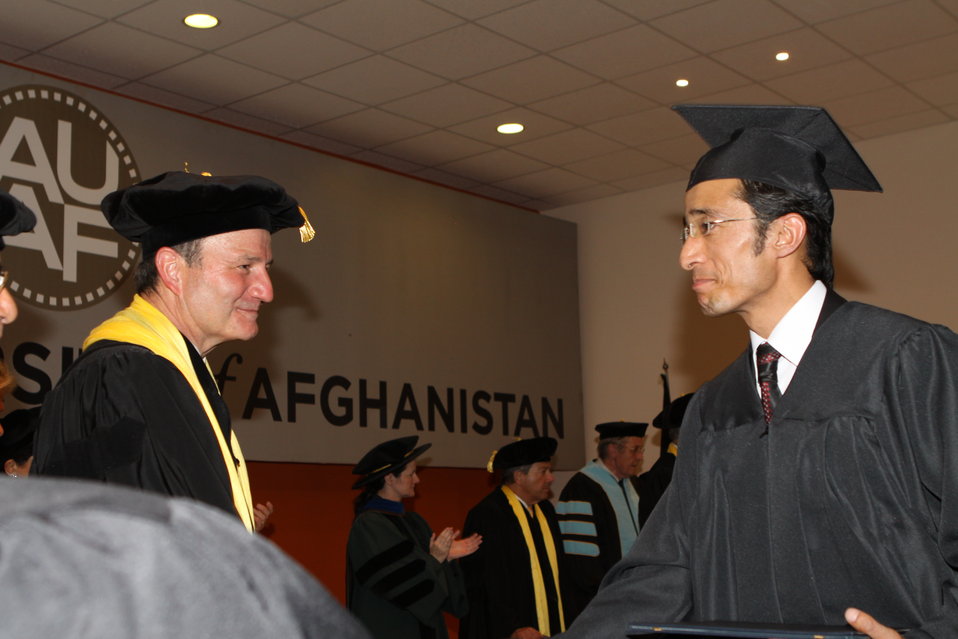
100526 AUAF Graduation 298